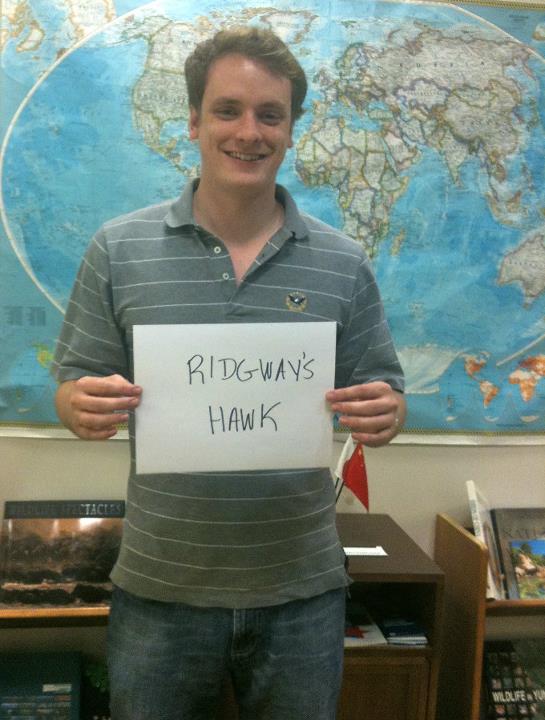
Derek Litchfield, 'Ridgway's Hawk,'

International Affairs participates in FFI's In Our Hands campaign